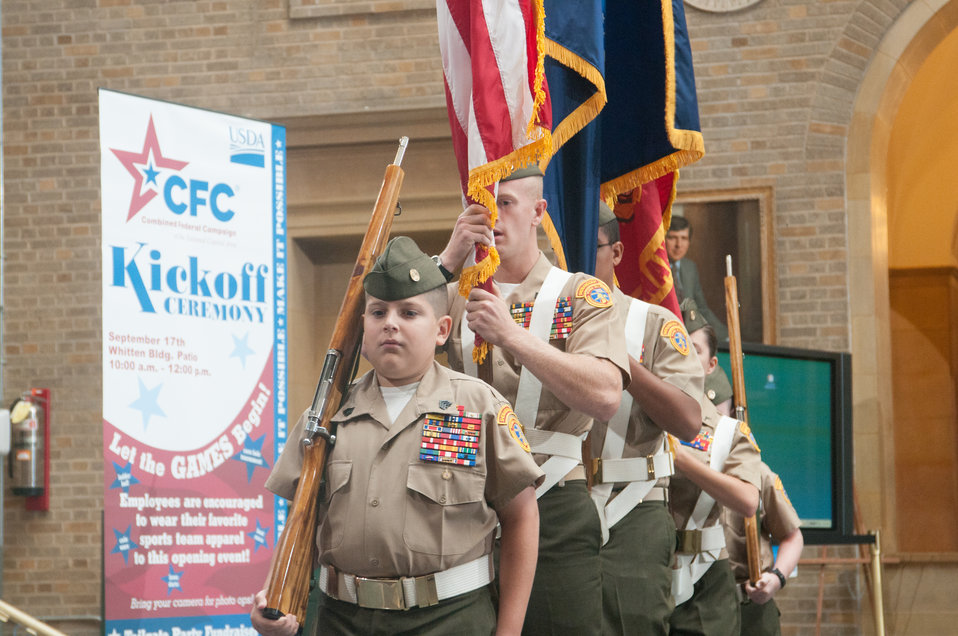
The Colors are presented by the Color Guard from the Young Marines of the Marine Corps League during the 2013 Combined Federal Campaign Opening Ceremony on Tuesday, Sept 17, 2013 in the Whitten Building, U.S. Department of Agriculture (USDA), Washington, D.C. Employees took personal time to attend and participate in fund raising activities that generated donations and donation registrations that will help support charities. The Combined Federal Campaign (CFC) is the largest and most successful workplace charitable giving drive in the world. CFC is the only authorized charitable organization solicitation of Federal employees in their workplaces. CFC is structured to support and to promote philanthropy through a voluntary program that is cost-efficient and effective in providing all Federal employees the opportunity to impact the CFC charitable interest of their choosing. For more information about CFC, please see www.usda.gov/wps/portal/usda/usdahome?navid=USDA CFC USDA Photo by Lance Cheung.